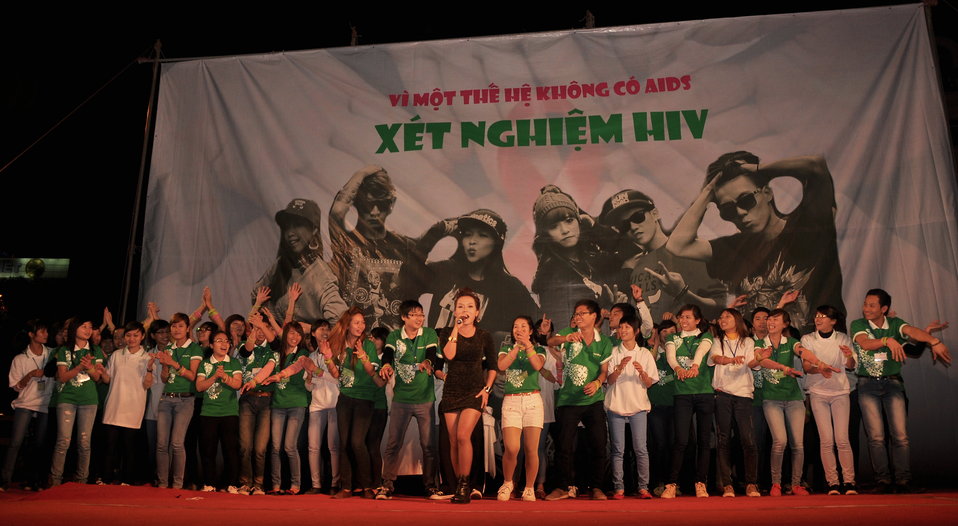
USAID and PEPFAR supports an outdoor concert to promote Vietnam's national action month for HIV

Hanoi, December 18, 2012.